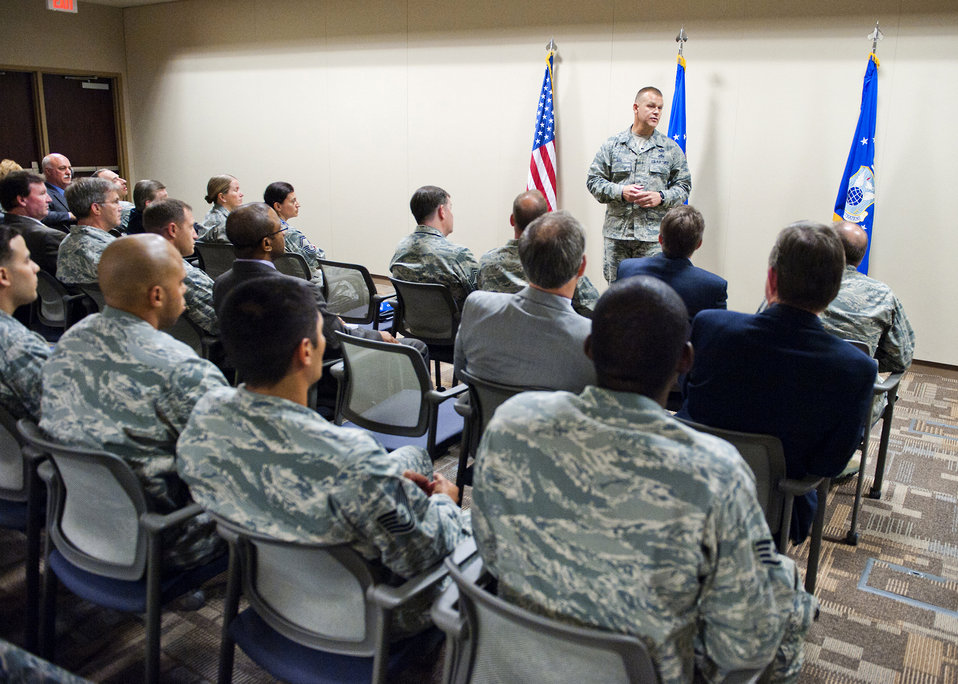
Chief Roy

Chief Master Sergeant of the Air Force James A. Roy speaks to civilians and military members July 11, 2011, during an